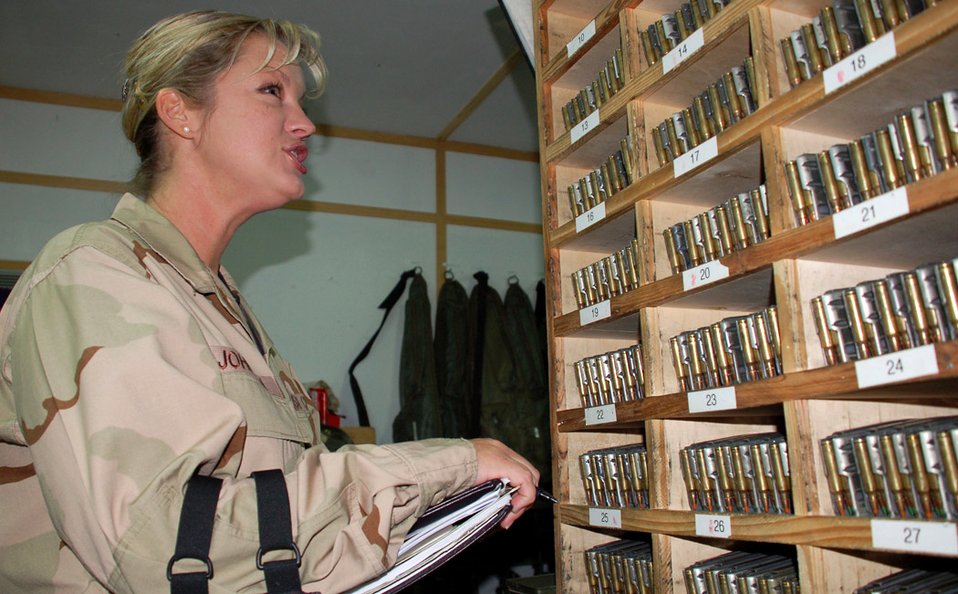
Audit Agency keeps war machine well-tuned

Amy Johnson, Air Force Audit Agency team member, performs an inventory at the base armory at Manas Air Base, Kyrgyzstan. The five-member team is conducting an inspection of four areas at Manas throughout November.